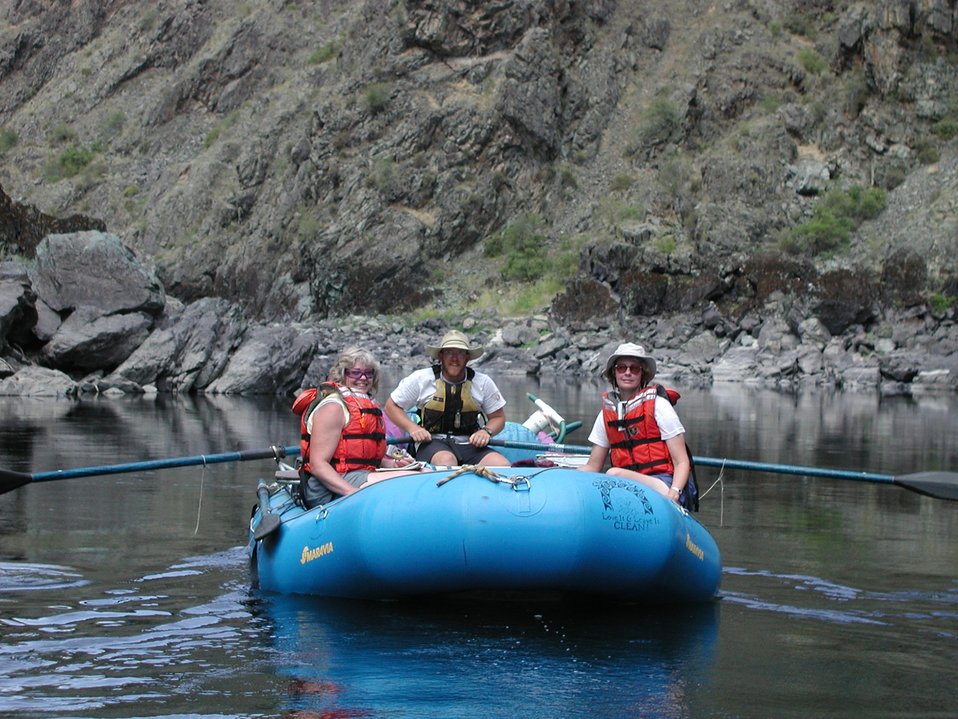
Recreation Rafting on Lower Salmon River Cottonwood Field Office UCSC Upper Columbia Salmon Clearwater District